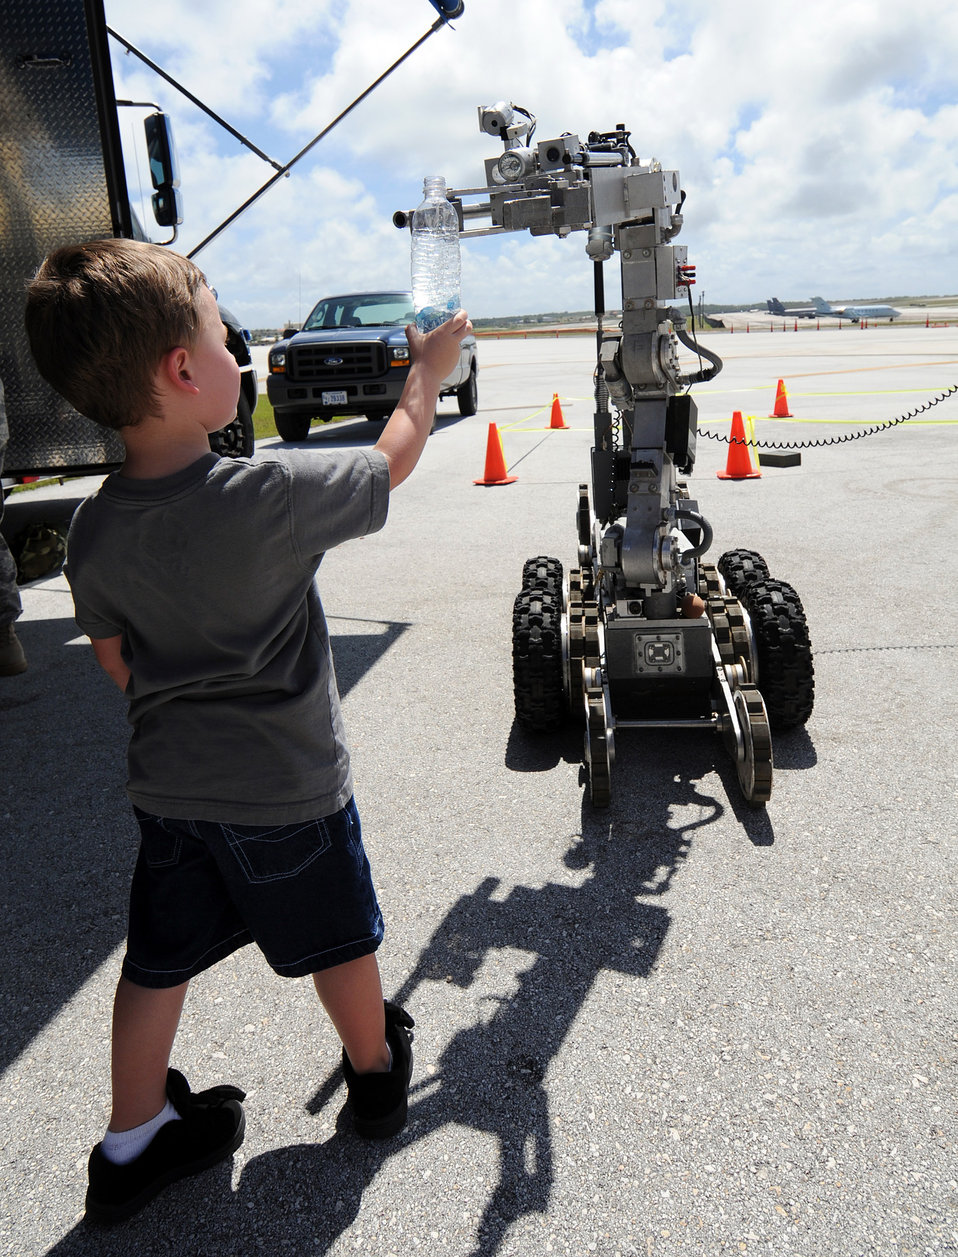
Andersen officials give up-close view of F-22, B-2

Dylan Hart is shown how the functions of a F6-Alpha explosive ordnance robot work during the March 28 open house at the Andersen Air Force Base, Guam. The explosive ordnance disposal unit also featured the EOD-9 bombsuit and the new chemical warfare suit.